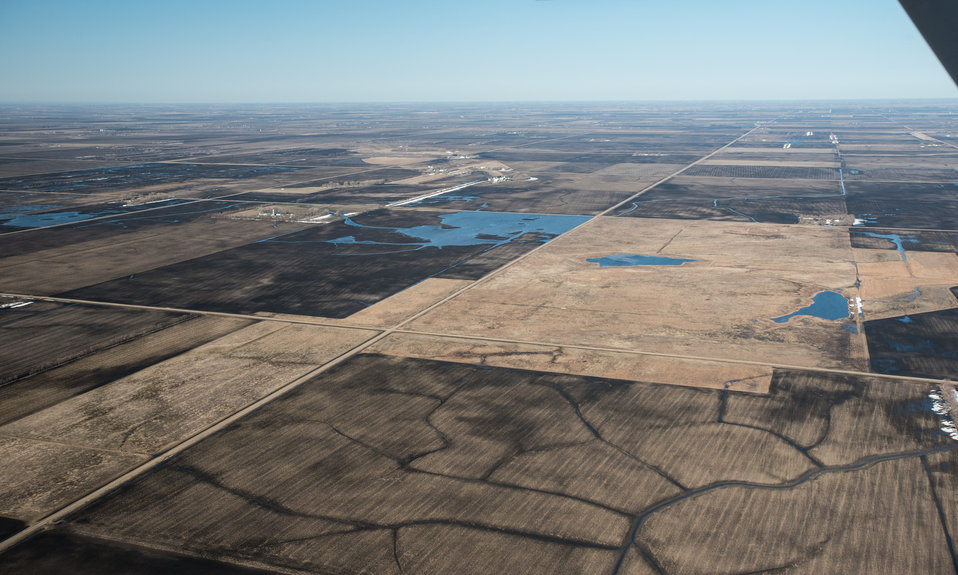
Vertin, U.S. Department of Agriculture (USDA) Natural Resources Conservation Service (NRCS) Wetland Reserve Program (WRP) in Wilkin County, MN, on Tuesday, April 30, 2013. For information about this and other programs from the USDA Red River Basin Initiative (RRBI) please see www.mn.nrcs.usda.gov/news/features13/RRBI.html.